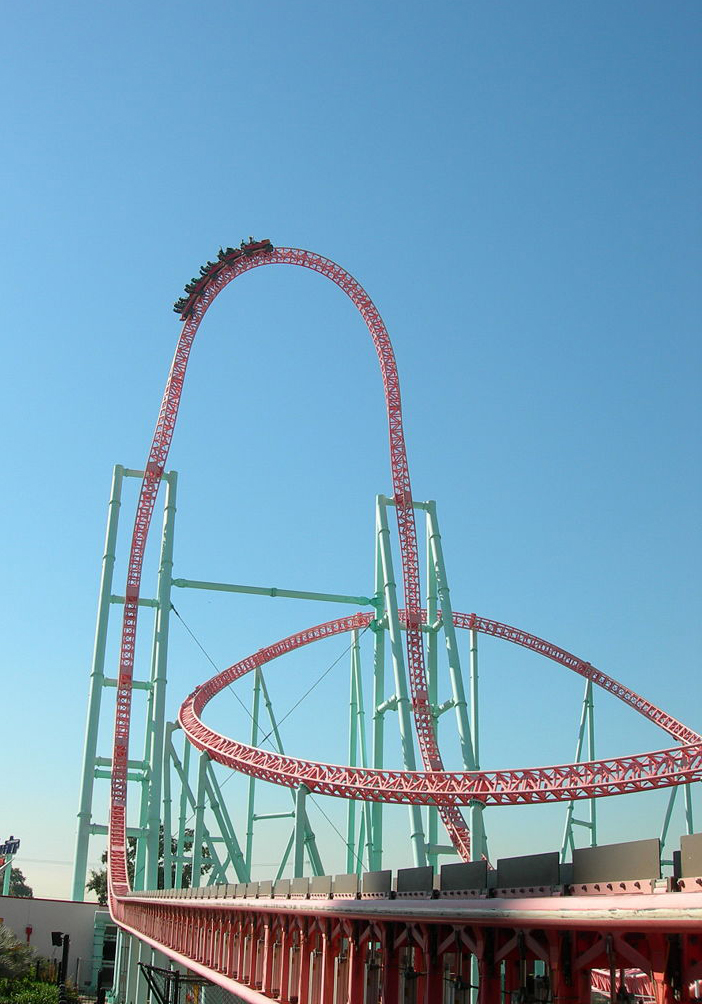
Deutsch: Xcelerator, eine Stahlachterbahn (Launched Coaster) im US-amerikanischen Freizeitpark Knott's Berry Farm in Buena Park (Nähe Los Angeles). Xcelerator, a steel launched roller coaster at Knott's Berry Farm in Buena Park, California.